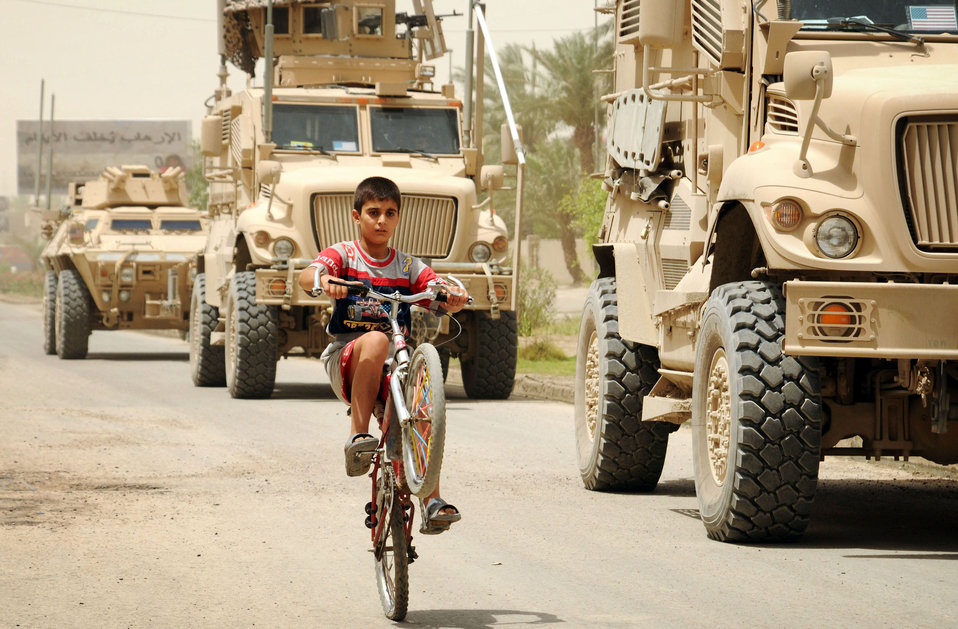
Look at this!

An Iraqi boy pops a